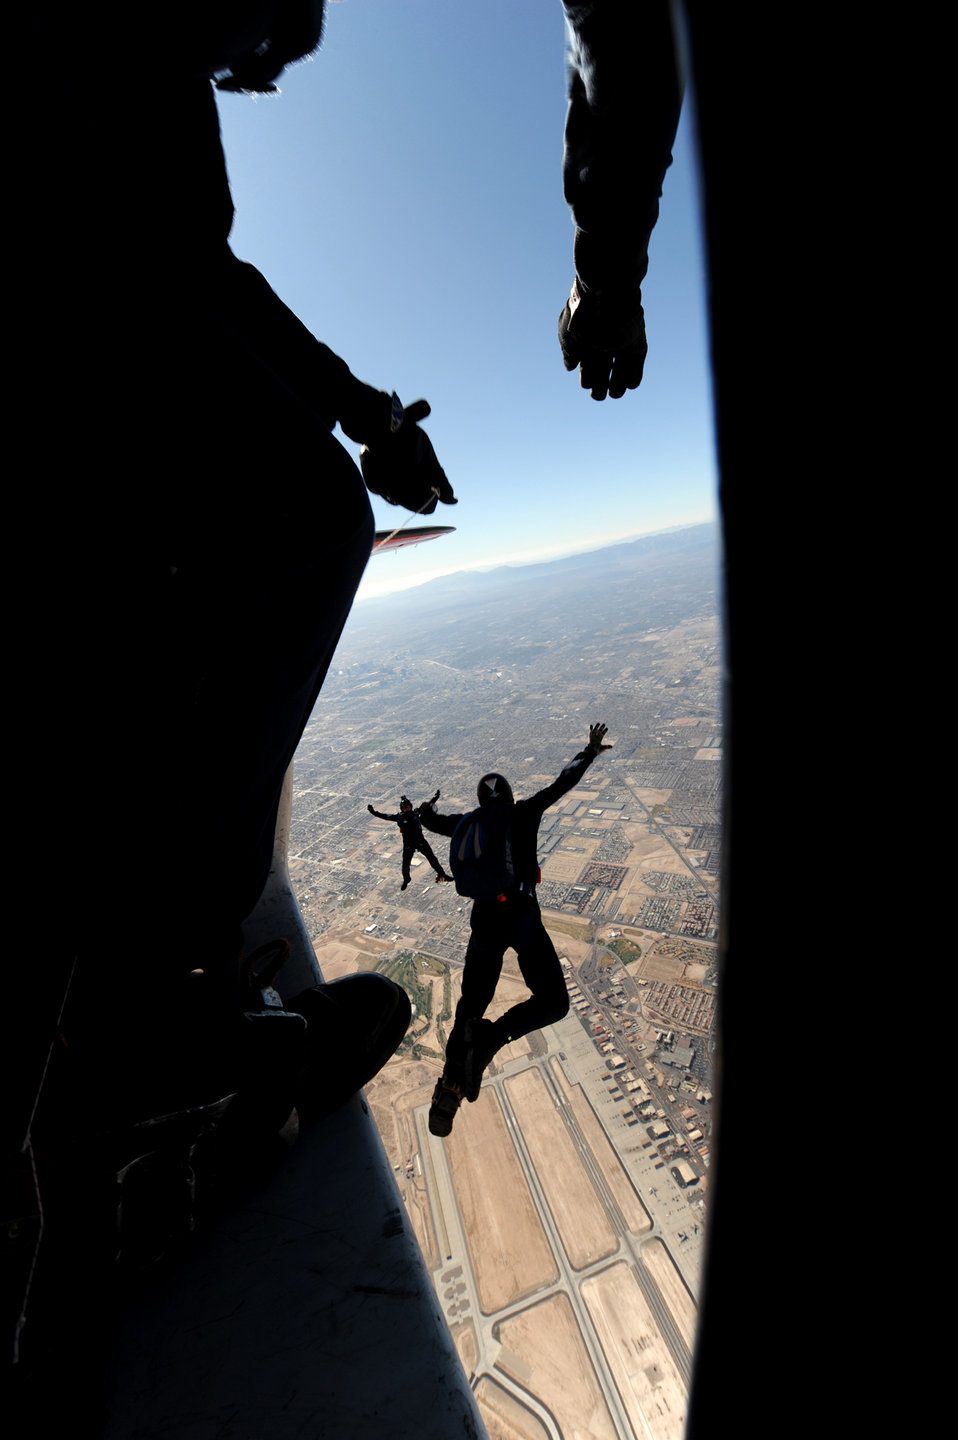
Look out below!

The U.S. Air Force Academy Parachute Team jumps out of their aircraft over Nellis Air Force Base, Nev., for the Aviation Nation air show Nov. 15, 2009. The open house is an opportunity for the Las Vegas community to view aerial demonstrations and static displays of various aircraft from the military.